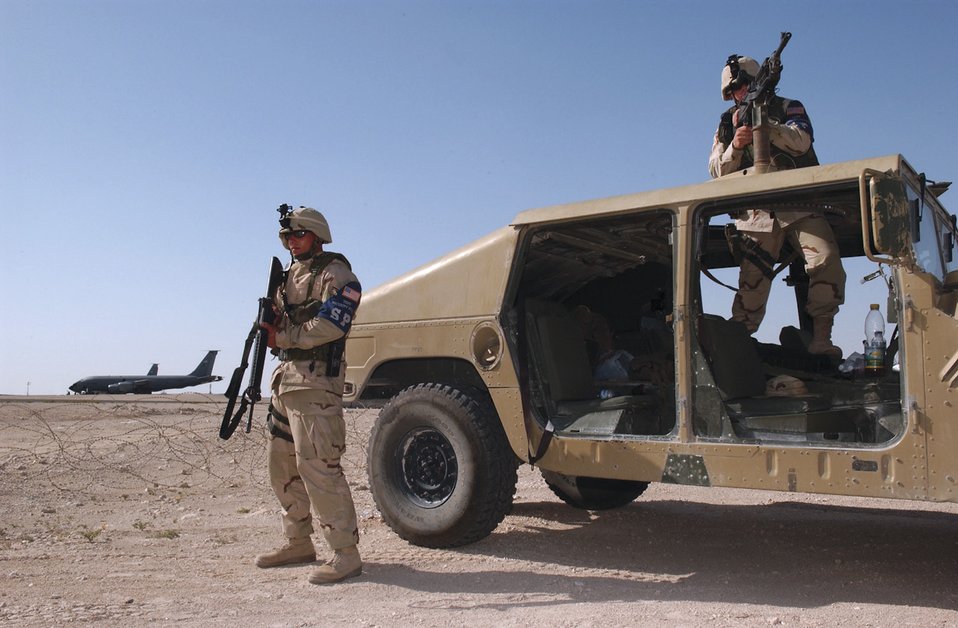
Young Airmen protect base, people

SOUTHWEST ASIA -- Two 379th Expeditionary Security Forces Squadron Airmen guard the flightline perimeter at a forward-deployed location.